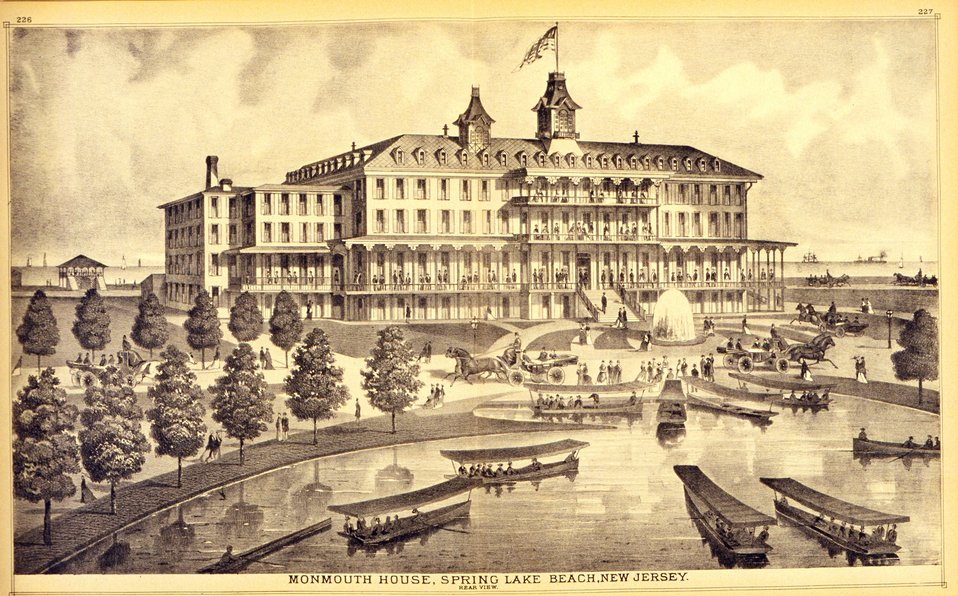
Monmouth House, Spring Lake Beach, New Jersey. Rear view. P. 227. 'Historical and Biographical Atlas of the New Jersey Coast,' by T. F. Rose, 1878.